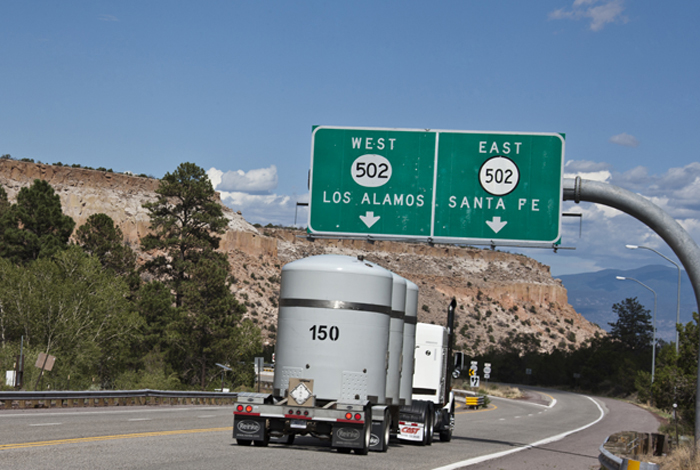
Los Alamos National Laboratory removed 916 cubic meters from its stored inventory in 2011, more than its goal of 800 cubic meters

It plans to more than double that effort during fiscal year 2013, which begins October1st, with a goal of shipping 1,800 cubic meters by the end of the fiscal year on September 30, 2013. The final 1,106 cubic meters will be shipped by June 30, 2014.